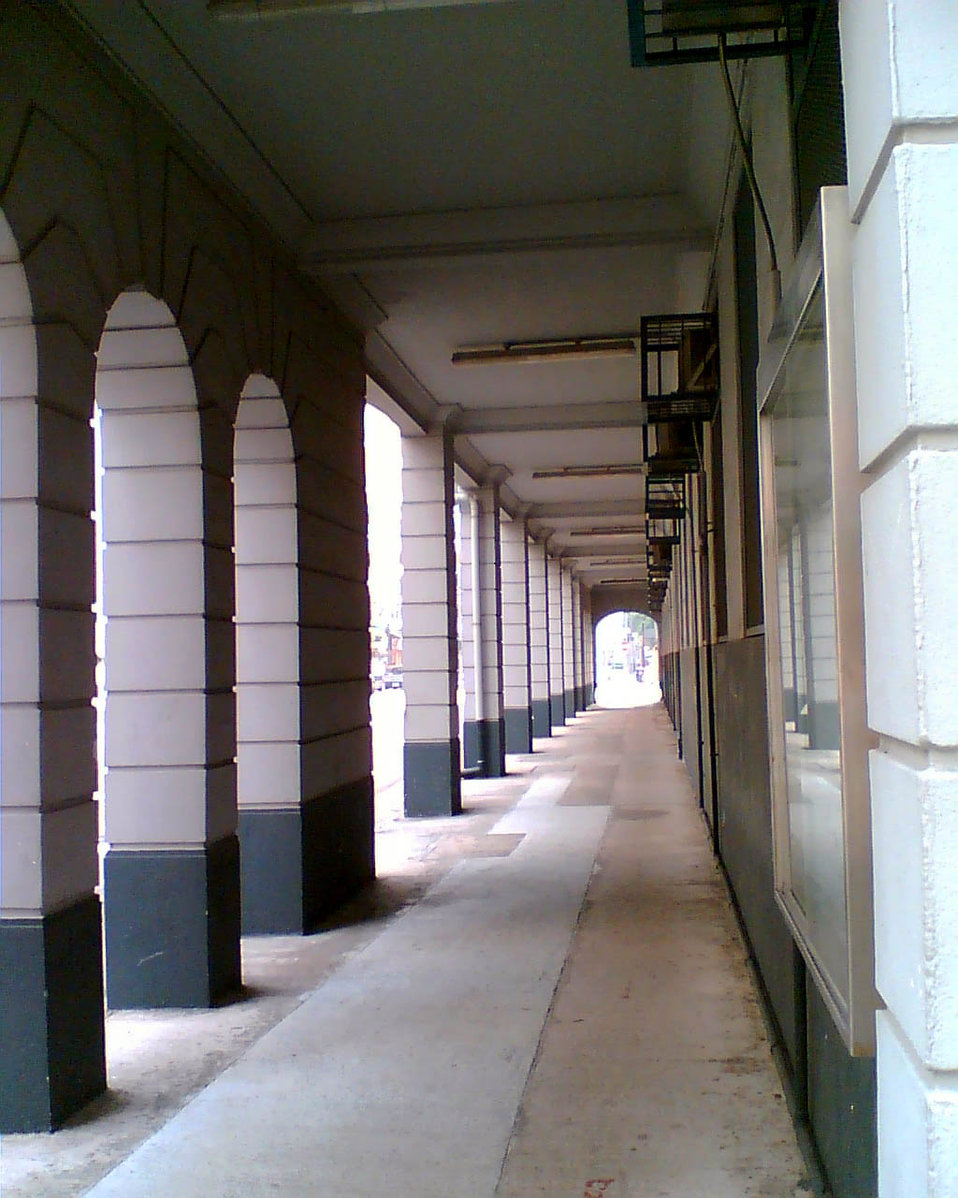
油麻地警署zh:門廊